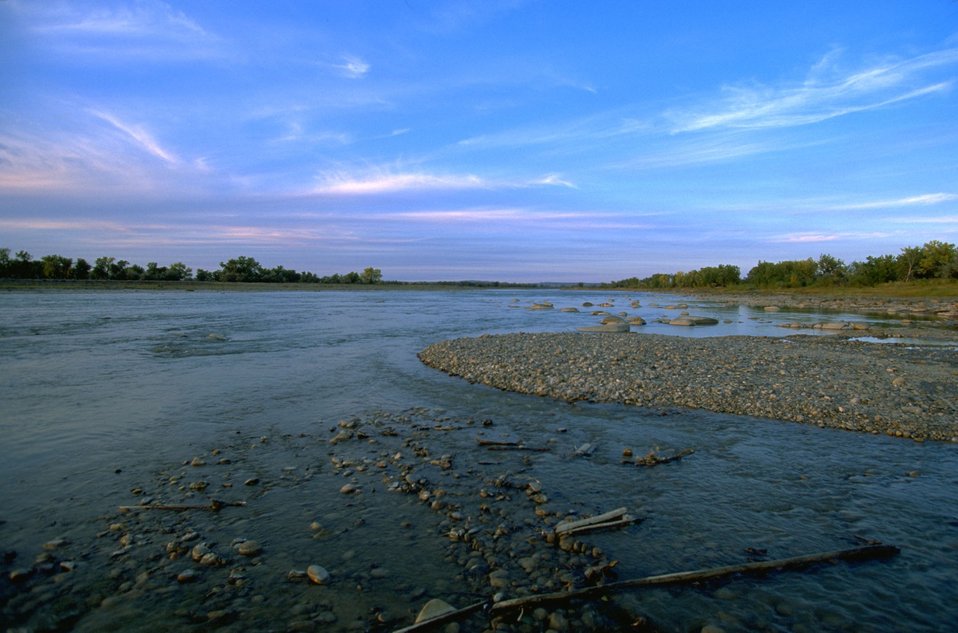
Yellowstone River near Matthews Recreation Site